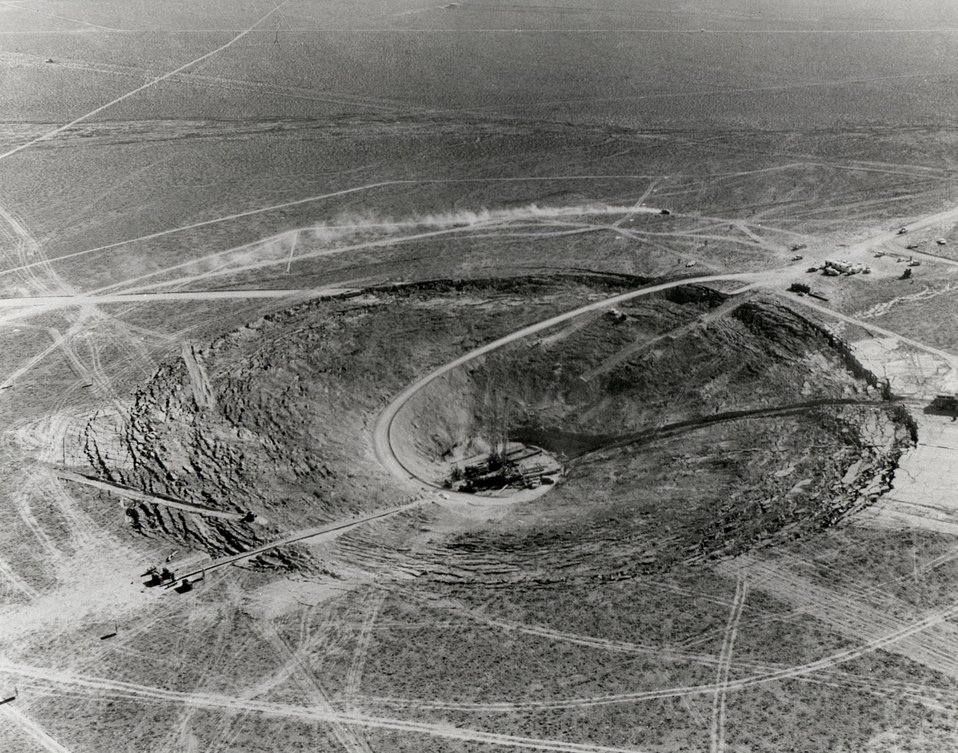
Subsidence crater caused by an underground, intermediate yield, atomic detonation known as the Mississippi Event, May 10, 1962 at the Nevada Test Site. Circa 1969.